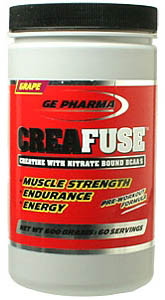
RECALLED – Dietary Supplement

September 12, 2013 – Product Recall – GE Pharma, LLC Announces a Recall of Dietary Supplement Creafuse Powder Due to Possible Health Risk.